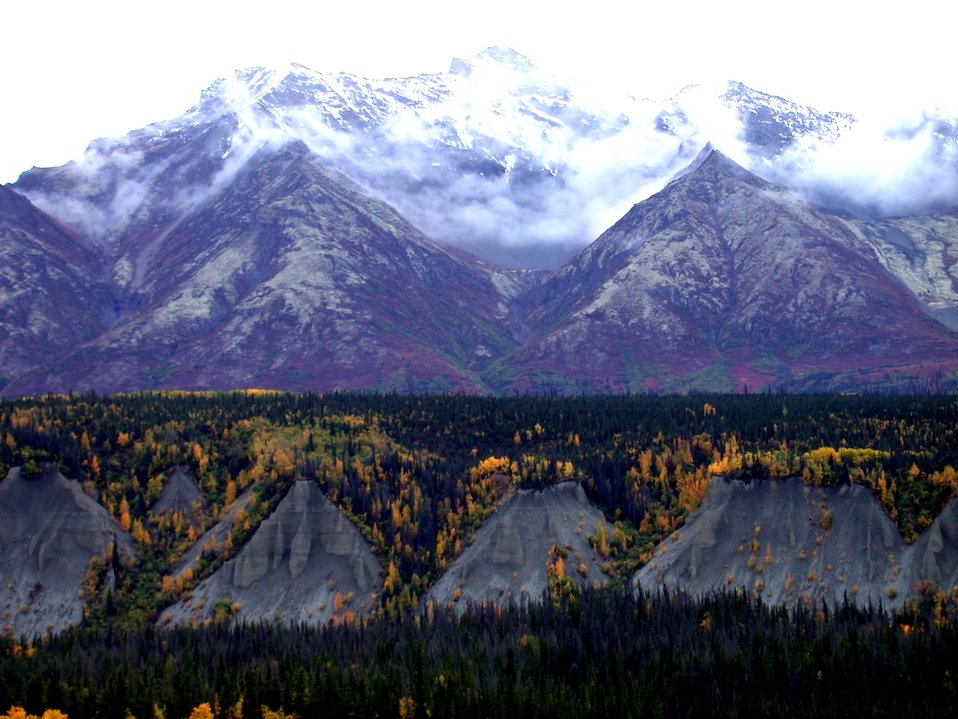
Remarkable fall colors. An outstanding example of triangular facets along a fault up-lifted mountain range.